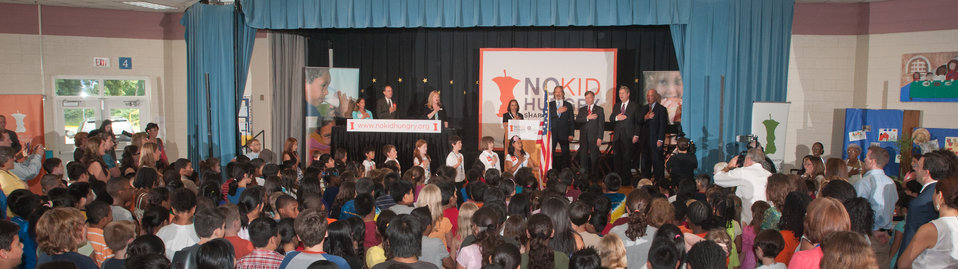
Left to right on stage School Board Vice Chairperson Abby Raphael, Arlington County School Superintendent Patrick K. Murphy, Federation of Virginia Food Banks Executive Director Leslie Van Horn, Barcroft Elementary School Principal Miriam Hughey-Guy, No Kid Hungry National Campaign Spokesperson Jeff Bridges, Virginia Governor Bob McDonnell, U.S. Department of Agriculture Secretary Tom Vilsack and Share our Strength founder and Executive Director Bill Shore recite the Pledge of Allegiance with the students, parents and teachers of Barcroft Elementary School during the launch of the Virginia No Kid Hungry Campaign at the Arlington, VA, school on Tuesday, June 7, 2011.